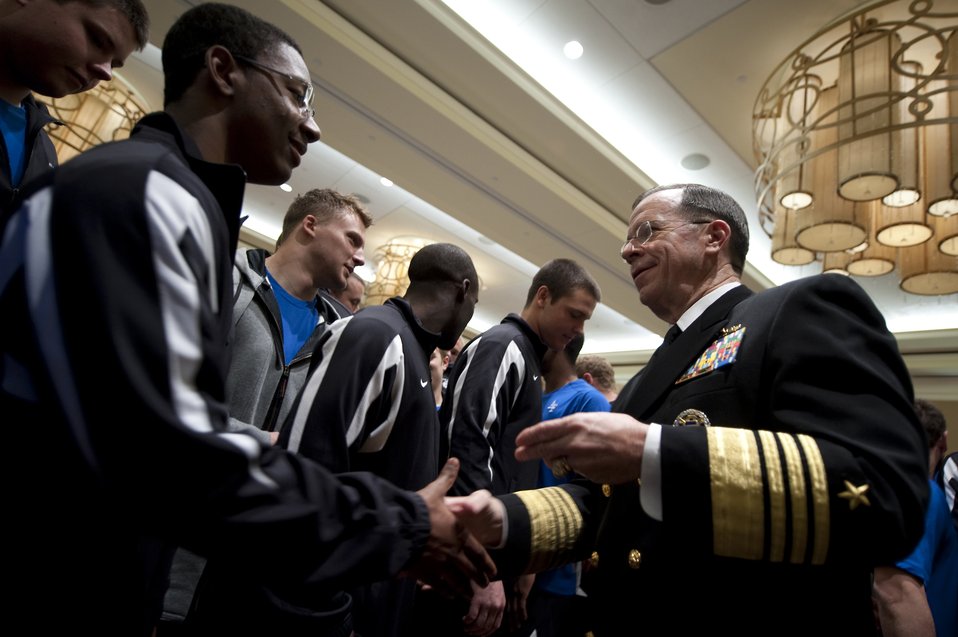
CJCS visits with Academy Falcons

Adm. Mike Mullen, chairman of the Joint Chiefs of Staff, greets members of the Air Force Academy Falcons football team Dec. 30, 2009, during a visit the day before the Armed Forces Bowl in Fort Worth, Texas. The Falcons won the bowl game, defeating the University of Houston Cougars 47-20.